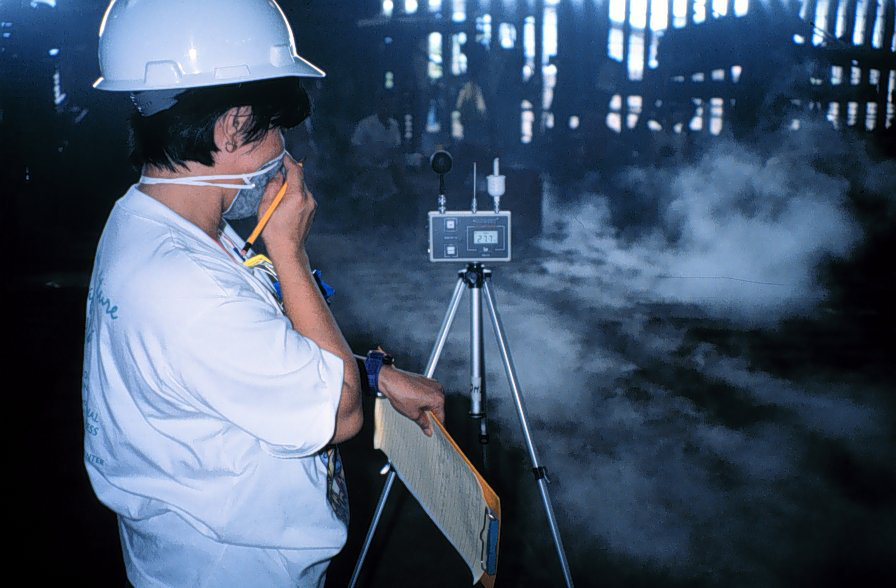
This 1998 photograph shows an inspector with the Philippines Department of Labor and Employment taking part in a hands-on industrial hygiene sampling course.